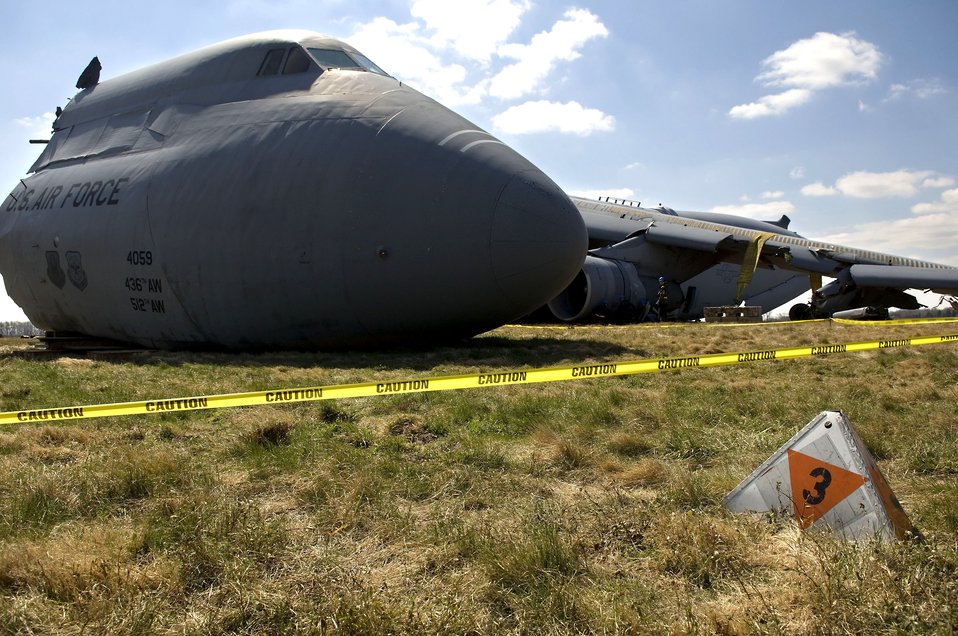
C5 crash site: de-fuel preparation

This C-5 Galaxy lies in a field on the south side of Dover Air Force Base, Del., after it crashed Monday, April 3, 2006. Specialists roped off the area with caution tape to preserve the scene until a safety investigation board completes its task.